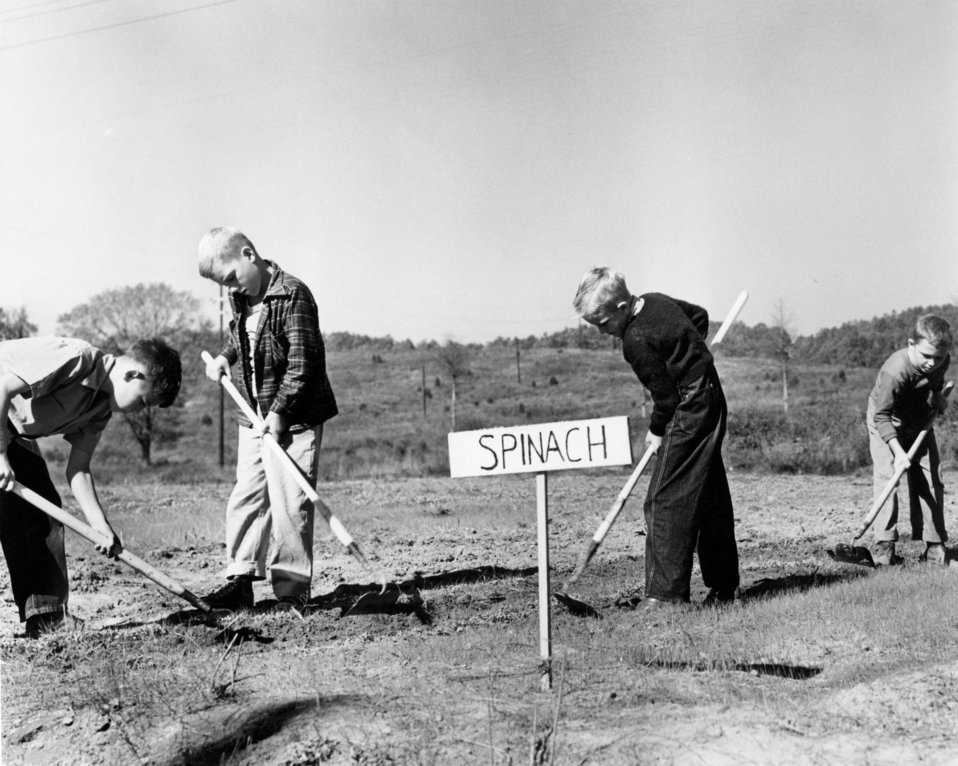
Gamble Valley School Garden Oak Ridge 1947

3833 DOE photo Ed Westcott 10-20-1947 Oak Ridge Tennessee